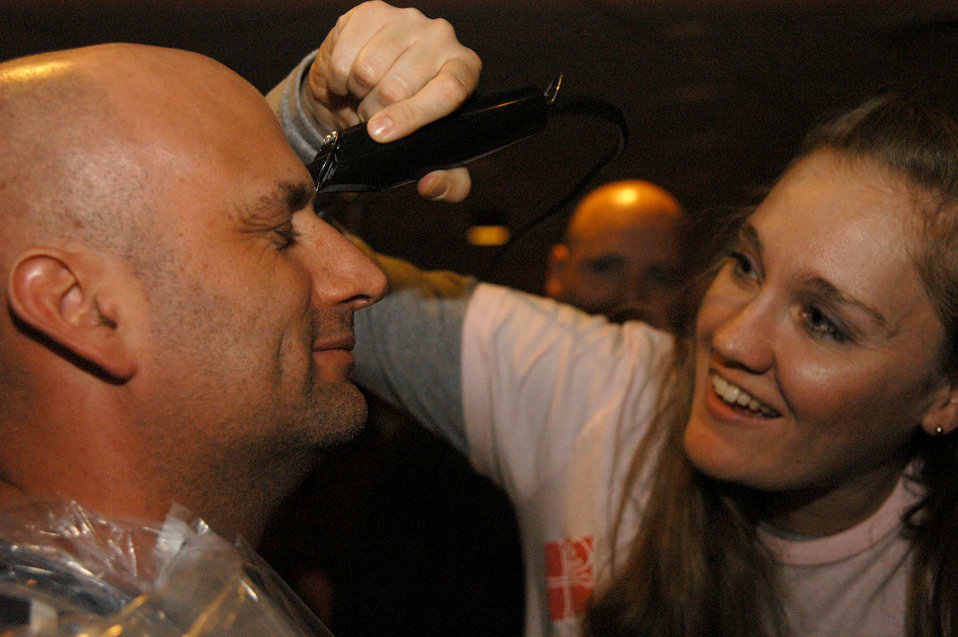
Season of giving extends throughout the year at top of the world

Tech. Sgt. Damon Jensen, 821st Support Squadron, remains calm as Tech. Sgt. Amanda Beatie, 821st SPTS, trims down his eyebrows as part of a fundraising event at the Julemand Festival here Nov. 17. The festival is an annual event that is part of Operation Julemand -- the Danish word for Santa Claus -- the base's largest charity drive. The operation raises money to buy Christmas gifts for children in the surrounding villages. From head and eyebrow shaving to a 'Thule Idol' contest, the festival raised more than $7,000.